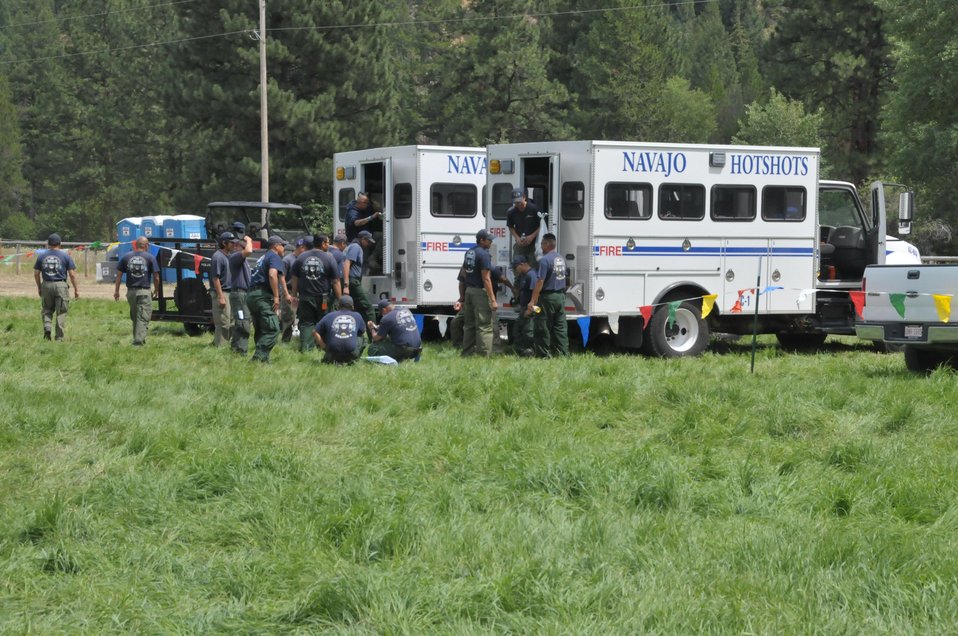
Navajo Hotshots arrive at Gold Pan Fire Incident Base on Nez Perce Road in preparation against the Gold Pan Fire. Hotshot (Type 1) crews are national resources and available for deployment throughout the U.S. The Gold Pan Fire in the Bitterroot National Forest near Conner, MT began by lightning on Jul. 16, 2013 by lighting have consumed approximately 16,412 acres.